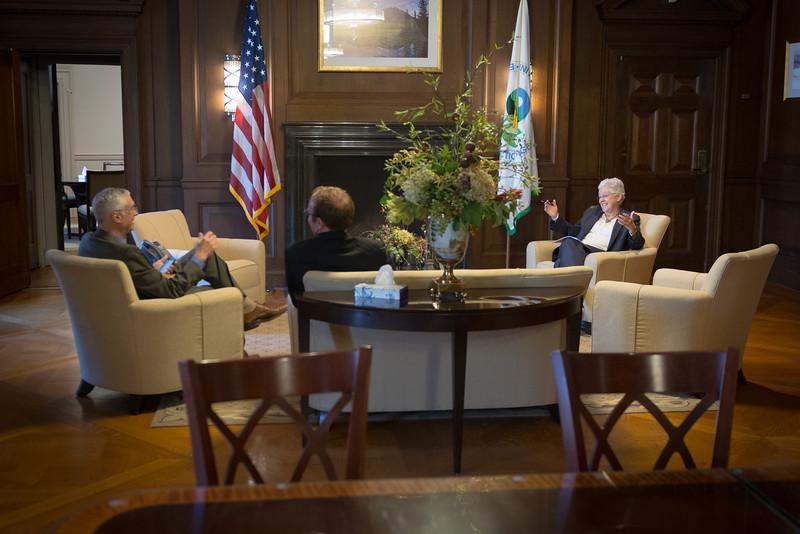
Day in the Life - June 2, 2014

10:16 am - Deputy Administrator Bob Perciasepe and McCarthy enjoy a lighter moment on an otherwise hectic and historic day. (6/15)